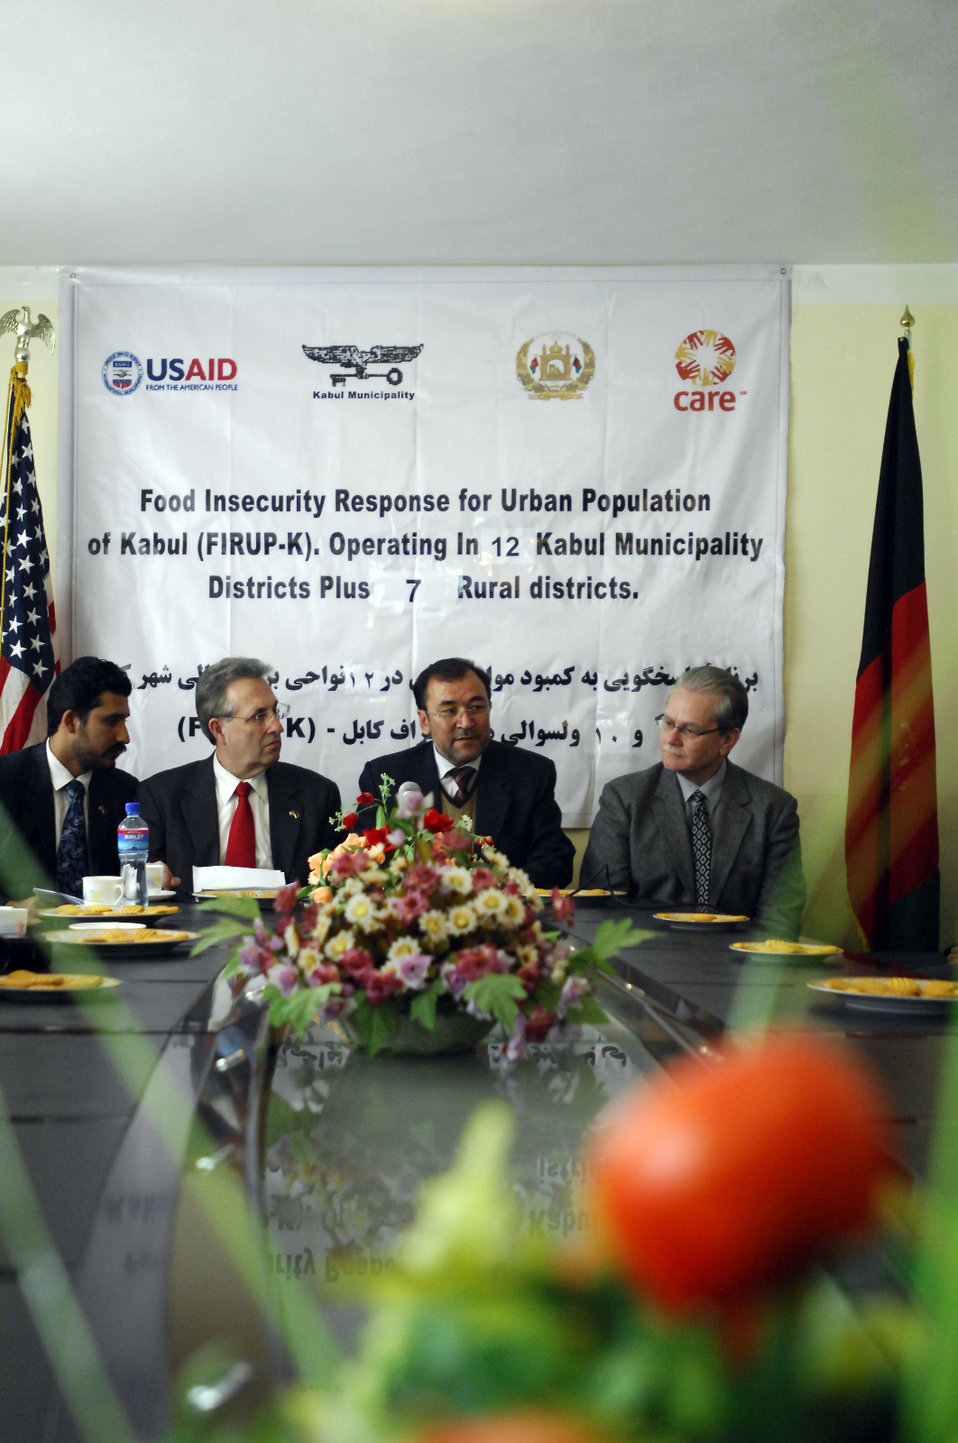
Care82 (1)